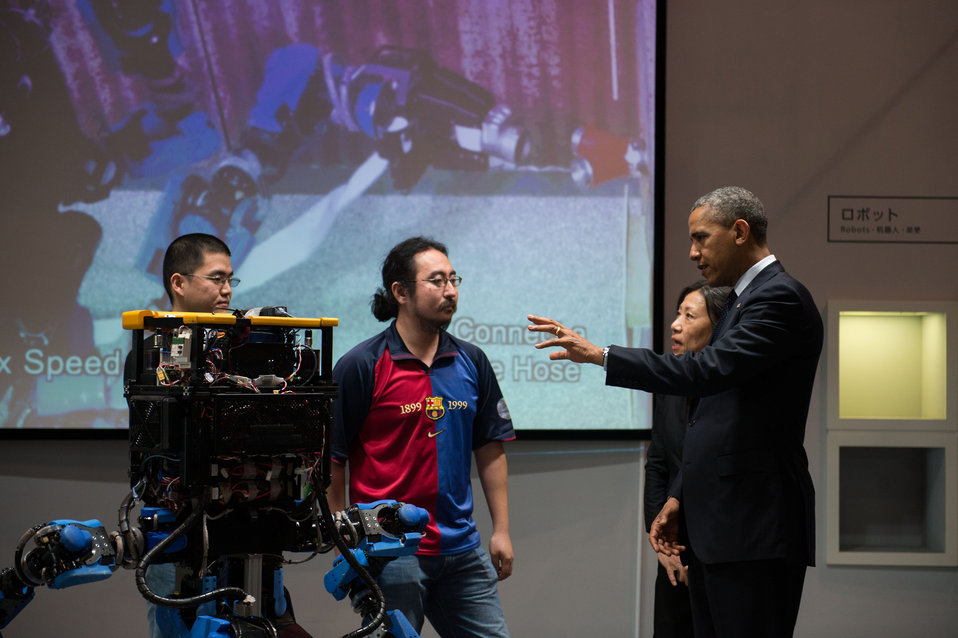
President Obama Talks to Designers of the SCHAFT Robot

U.S. President Barack Obama talks to designers of the SCHAFT robot, which was designed to work in disaster zones, during his visit to the Miraikan (the National Museum of Emerging Science and Innovation) in Tokyo, Japan, on April 24, 2014.